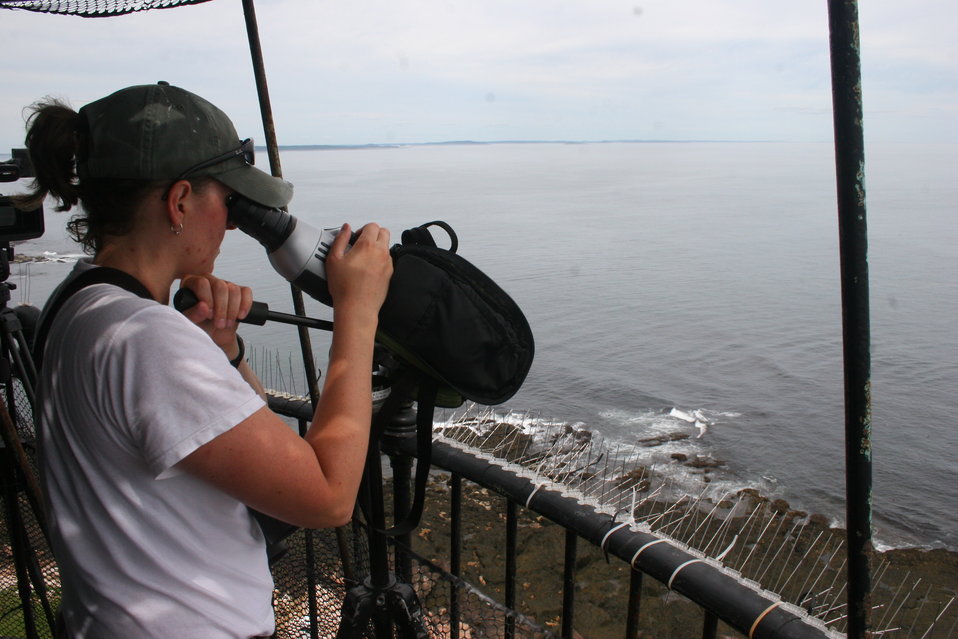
FWS Contractor Watching Puffins From Lighthouse